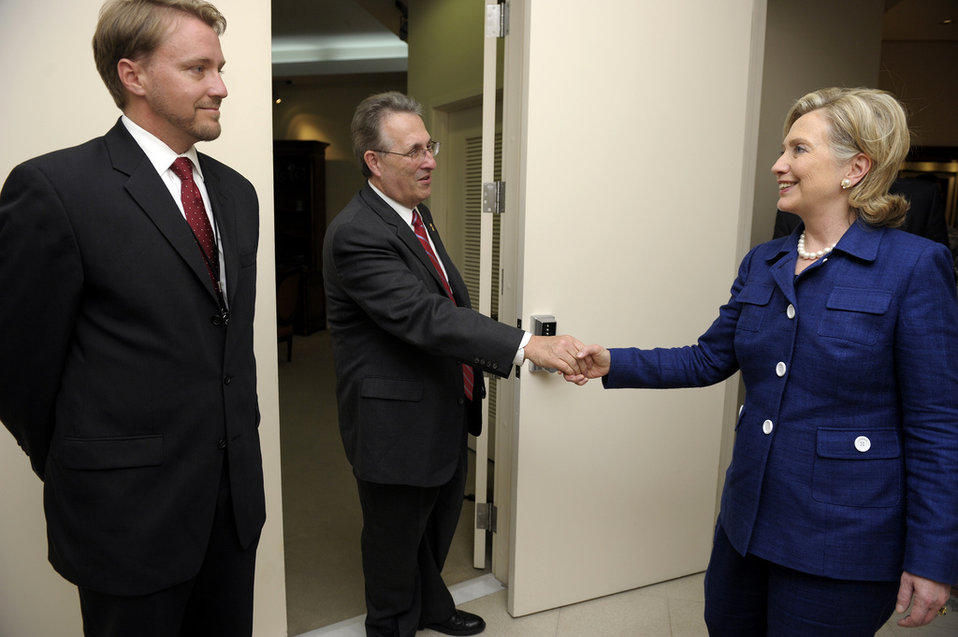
Secretary Clinton Shakes Hands With Staff at the U.S. Embassy Kabul in Afghanistan

U.S. Secretary of State Hillary Rodham Clinton is greeted by staff at the U.S. Embassy Kabul in Afghanistan, on July 19, 2010.